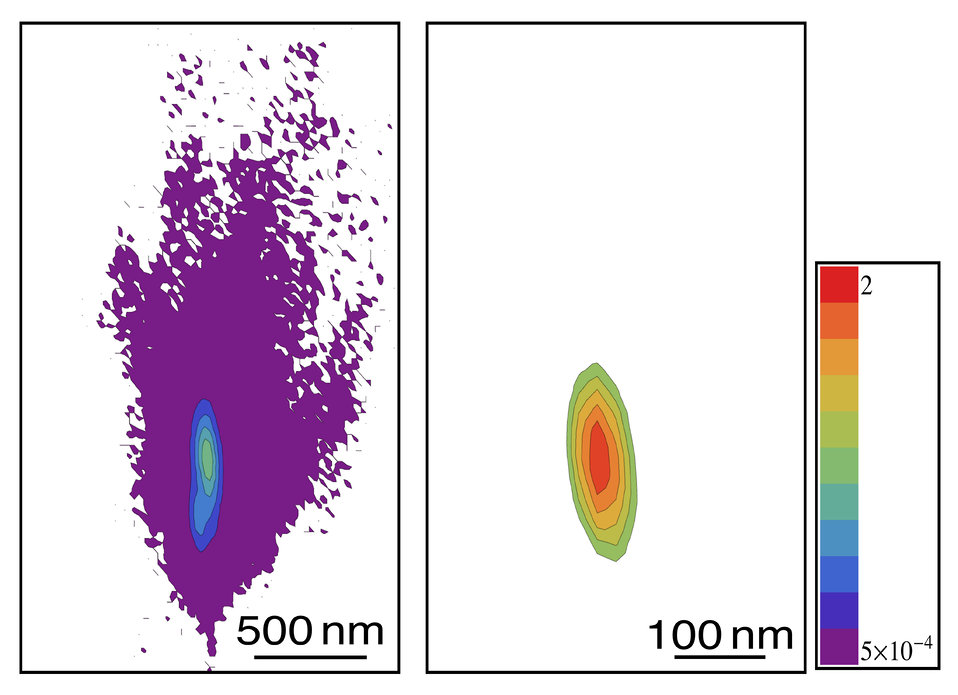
Nanoparticles, Optical Tweezers

NIST researchers new approach to trapping nanoparticles uses a control and feedback system that nudges them only when needed, lowering the average intensity of the beam and increasing the lifetime of the nanoparticles while reducing their tendency to wander. On the left, 100-nanometer gold nanoparticles quickly escape from a static trap while gold nanoparticles trapped using the NIST method remained strongly confined.